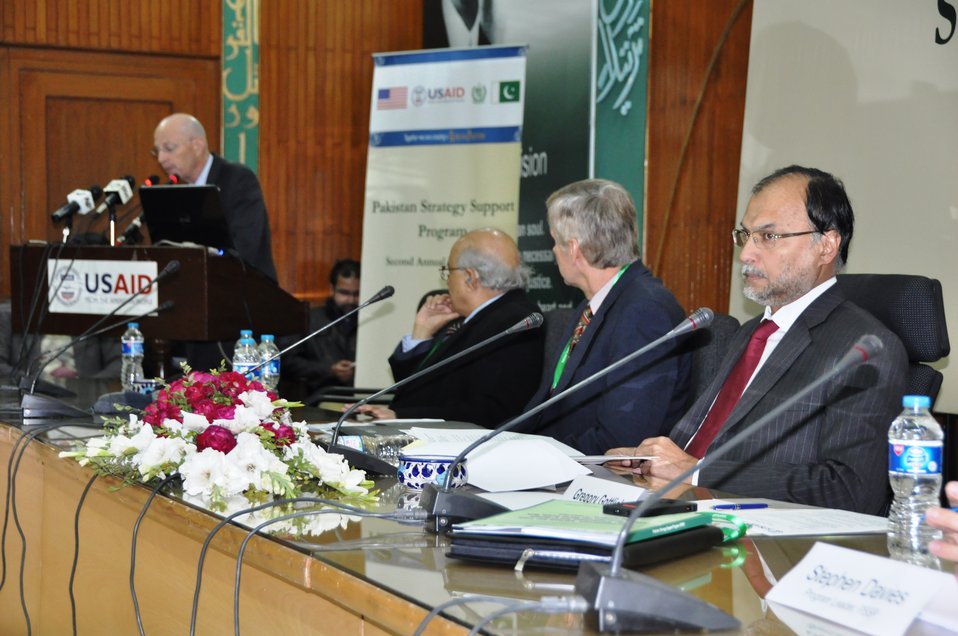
Jan 21, 2014- PSSP Event in Islamabad

The findings of the Pakistan Strategy Support Program (PSSP) will be featured in a two day conference beginning today. The PSSP program supported by the United States Government through the United States Agency for International Development (USAID) serves to promote economic growth and development in Pakistan. The PSSP is a four-year initiative, implemented by the International Food Policy Research Institute (IFPRI) in close coordination with the Pakistan Planning Commission.